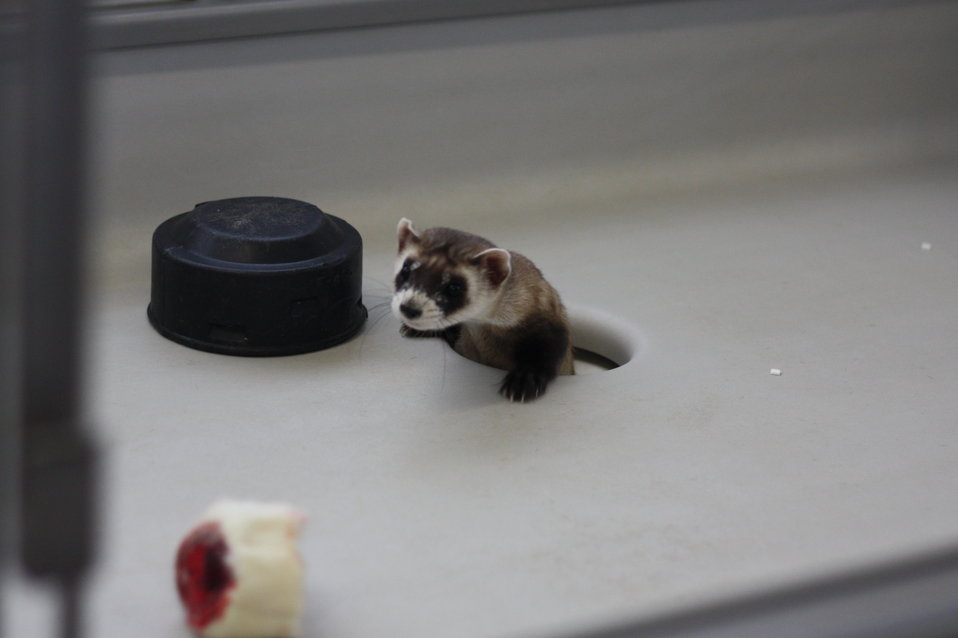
Interns visit the NBFFCC

In the summer of 2012, USFWS Region 6 interns visited the National Black-footed Ferret Conservation Center (NBFFCC) in Colorado to learn how the program reintroduces the endangered Black-footed ferret back into its native habitat.